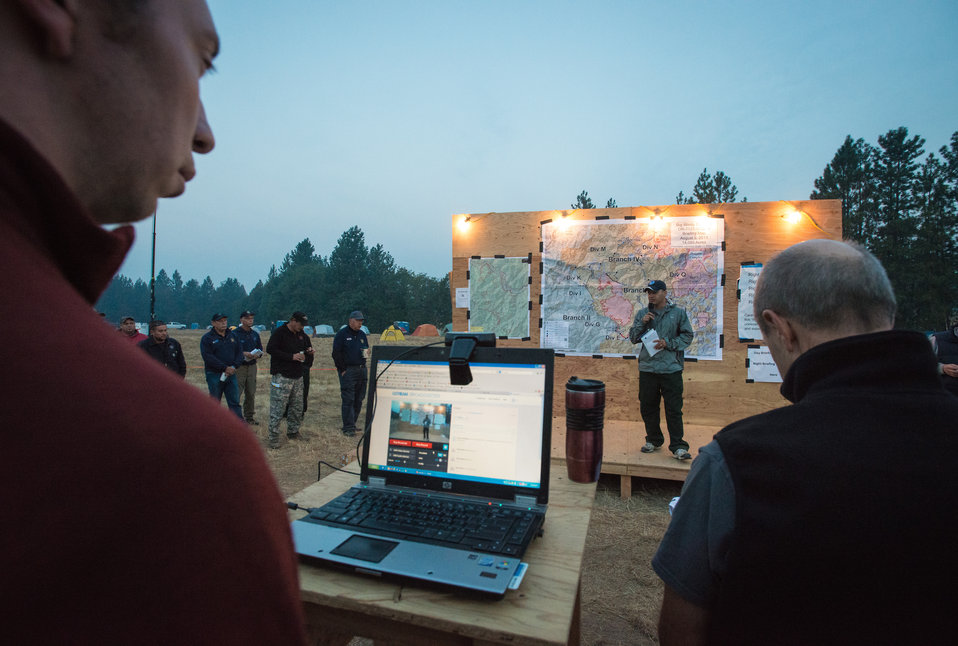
Connor Seli (left) ensures the Morning Briefing at the Big Windy Complex Wildlands Fire, Incident Command Post (ICP) in Merlin, OR on Friday, Aug 9, 2013. Several presenters taking turns, bringing people up to speed on the nights activates and what the objectives are for today. The fire center is approximately 15 miles west of Interstate-5 and East Northeast of Galice, Oregon.